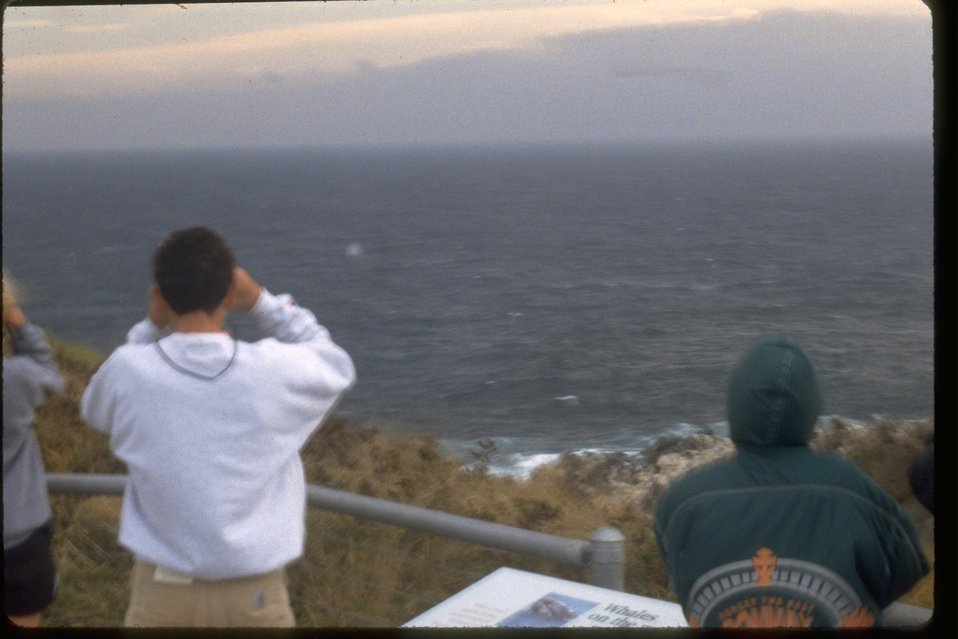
Visitors watching a spouting whale at Yaquina Head ONA.